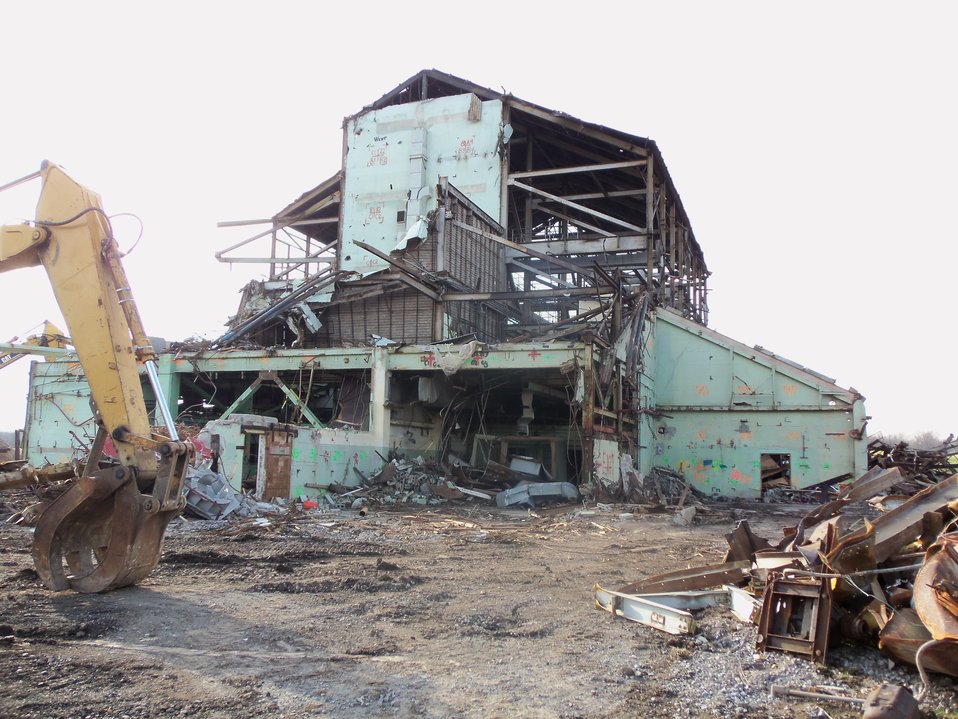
Building 401 shell and debris.

Activities from the Niagara Falls Storage Site, which is associated with the former Lake Ontario Ordnance Works. Formerly Utilized Sites Remedial Action Program (FUSRAP), a program initiated in 1974 to identify, investigate and clean up or control sites that were part of the Nation's early atomic energy and weapons program. Activities at the sites that are eligible for FUSRAP were conducted by Manhattan Engineer District (MED) or the Atomic Energy Commission (AEC), both predecessors of the Department of Energy (DOE). The U.S. Army Corps of Engineers was assigned management of FUSRAP by Congress in 1997.